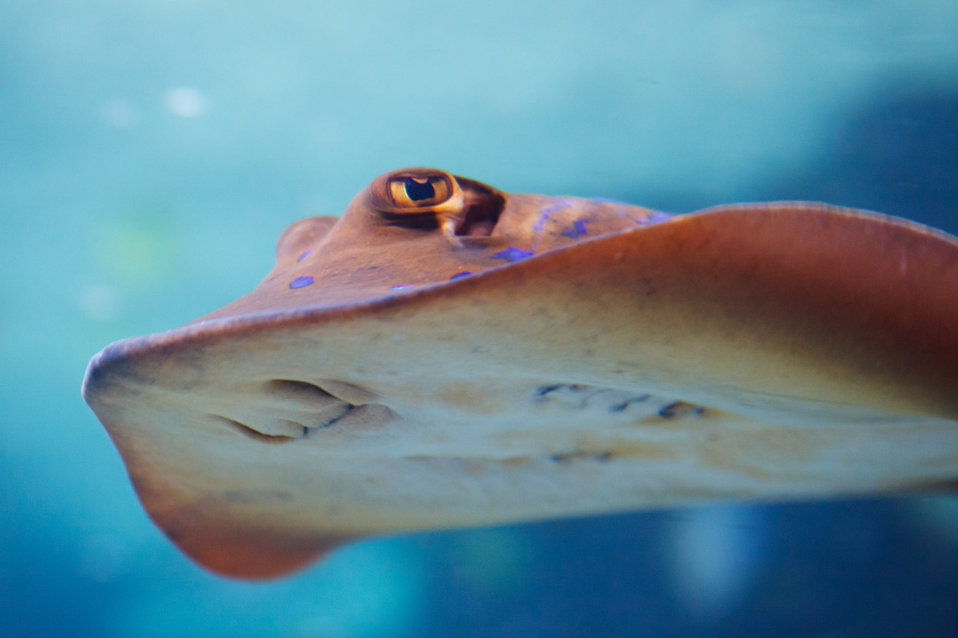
Stingray swimming

Closeup photo of a stingray.